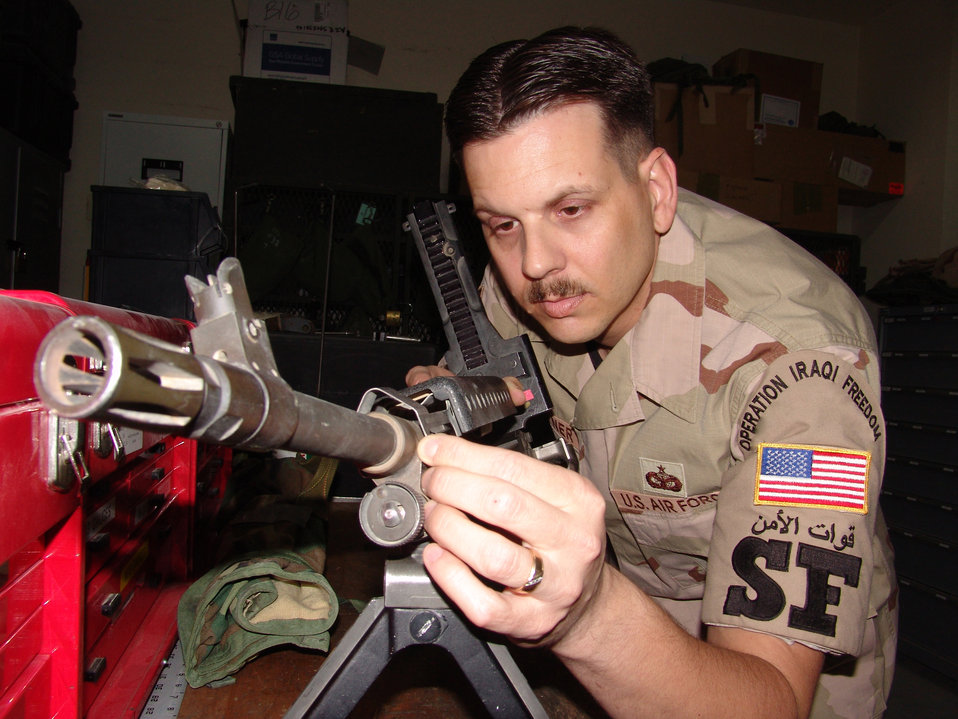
Weapon perfection

SOUTHWEST ASIA -- Tech. Sgt. Craig Haefner installs a heat shield on the barrel of an M-240B general purpose machine gun at a forward-deployed location. Sergeant Haefner is the noncommissioned officer in charge of the 386th Expeditionary Security Forces Squadron armory and is deployed from Dyess Air Force Base, Texas.